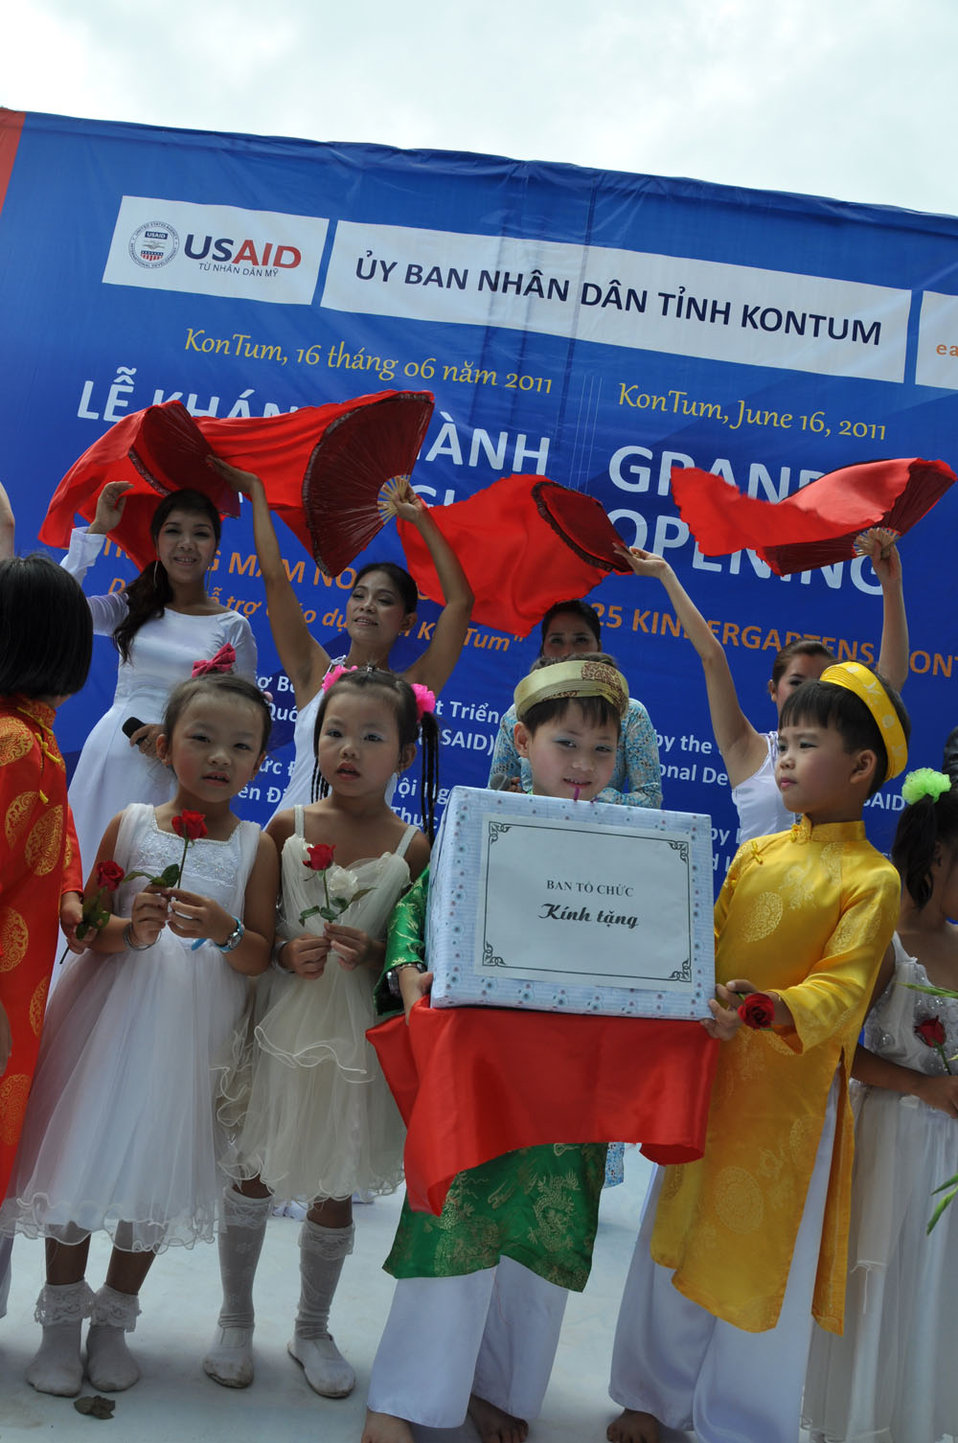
Children celebrate 25 refurbished and expanded kindergartens.